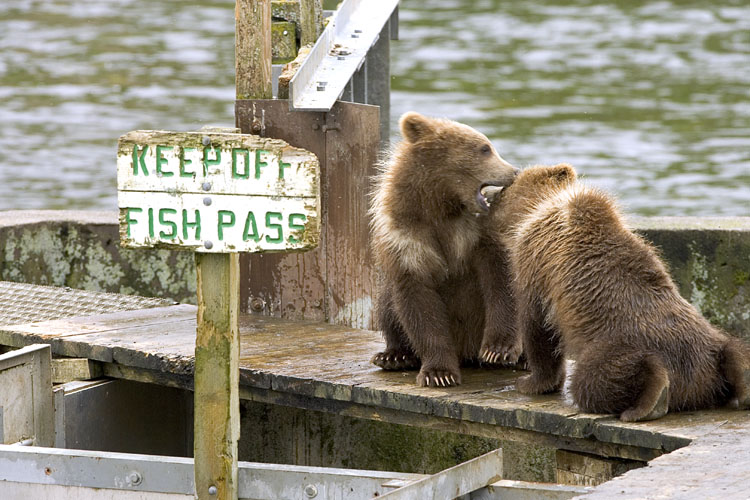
Wildlife of Kodiak Refuge